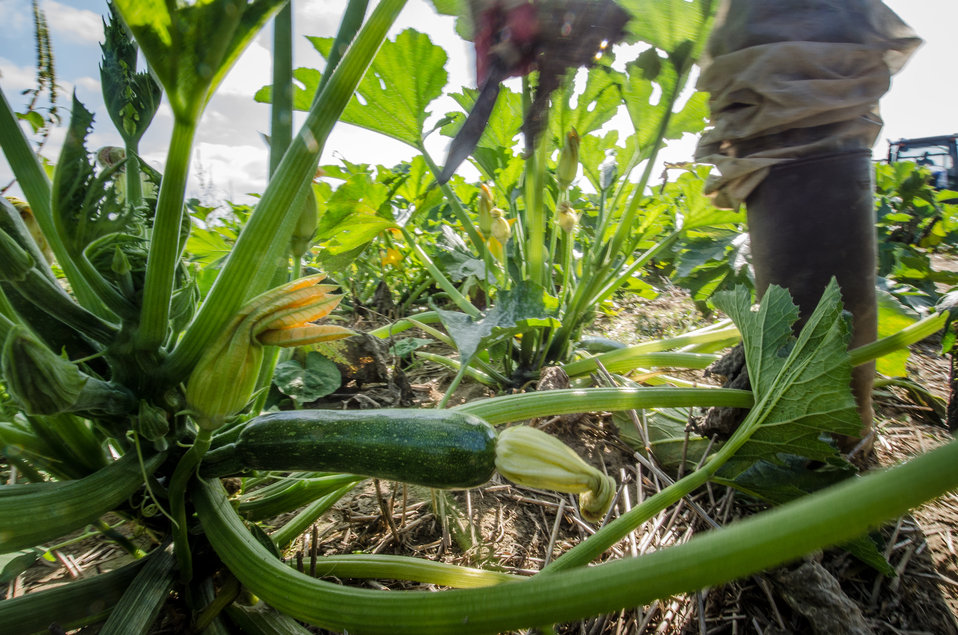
Migrant workers harvest green zucchini squash from rows of plants at Kirby Farms in Mechanicsville, VA on Friday, Sep. 20, 2013. The squash is then transferred to the processing crew for washing and packaging for shipment to wholesalers. Kirby Farms a third-generation family farm that covers 500 acres and generates produce and grains on a year-around operation.